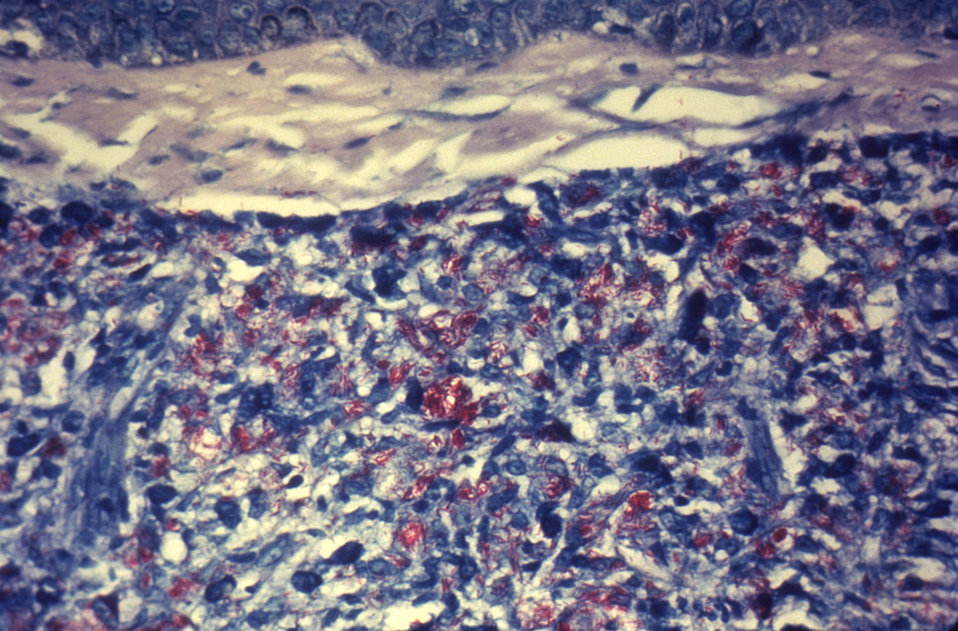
This acid-fast-stained photomicrograph of a tissue sample extracted from a patient with leprosy, revealed a chronic inflammatory lesion known as a granuloma, within which numerous red-colored Mycobacterium leprae bacteria are visible.